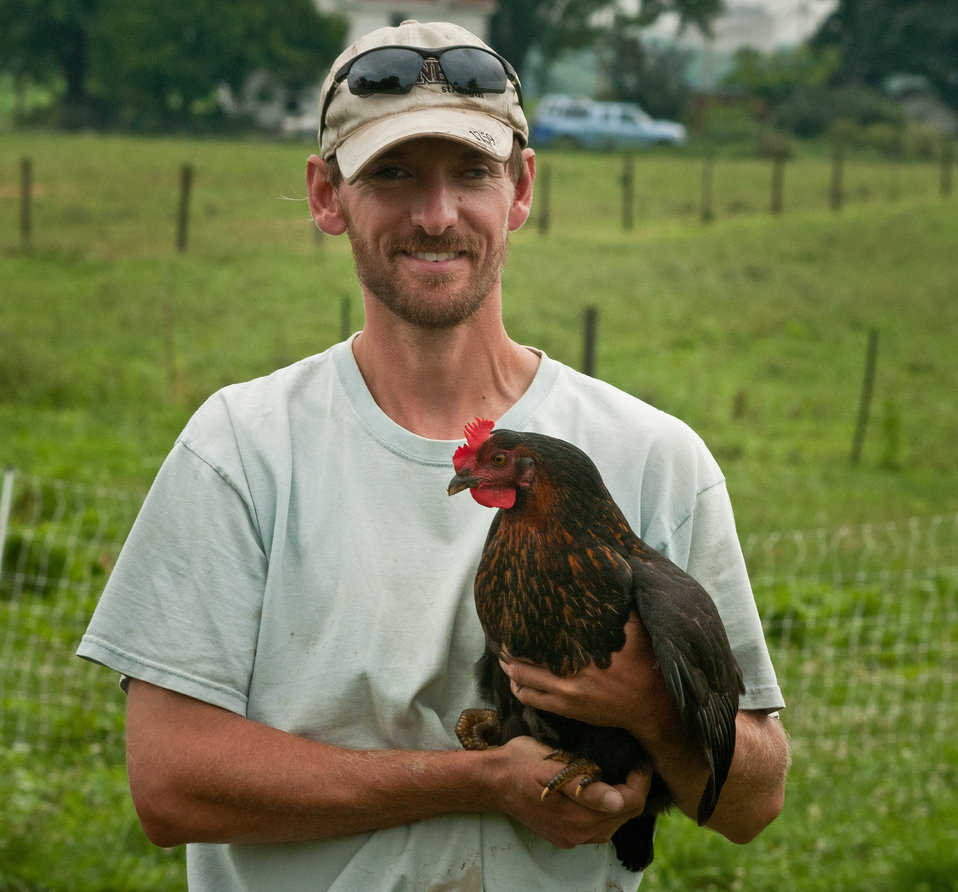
Farm assistant George Kloph holds a laying hen at Nick’s Organic Farm, in Adamstown, MD, on Friday, July 12, 2013. The fence helps keep predators away from the chickens. Discarded horse trailers have been repurposed as coops with nests on the side that allow for easy egg harvesting. The farm, owned by Nick Maravell, produces Black Angus beef, chicken, turkey, eggs, hay, soybeans, corn, alfalfa, orchard grass, rye; and other crops. The cattle are100% grass-fed receiving certified organic pasture, certified organic hay (in winter), water and mineral salts mixed with sea kelp. The cattle are not fed hormones, antibiotics or animal products. Poultry feed from grain is ground from organic grain. The poultry also graze on organic pastures. The farm has conducted on-farm research with federal, state and non-profit agencies to refine organic practices.